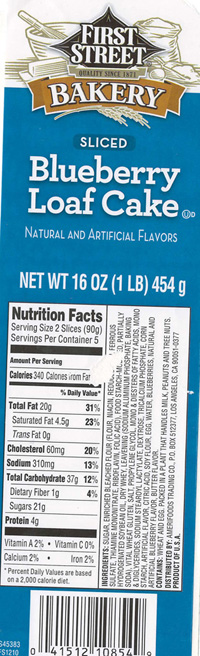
RECALLED – Blueberry Muffin 14oz and Blueberry Loaf Cake 16oz.

September 9, 2013 – Product Recall – Bubbles Baking Co. Issues an Allergen Alert for Undeclared Milk and Soy in First Street Label Blueberry Muffins, 14 oz. 9 Trays/ Case and Blueberry Loaf, 16 oz. 12 Trays/Case.